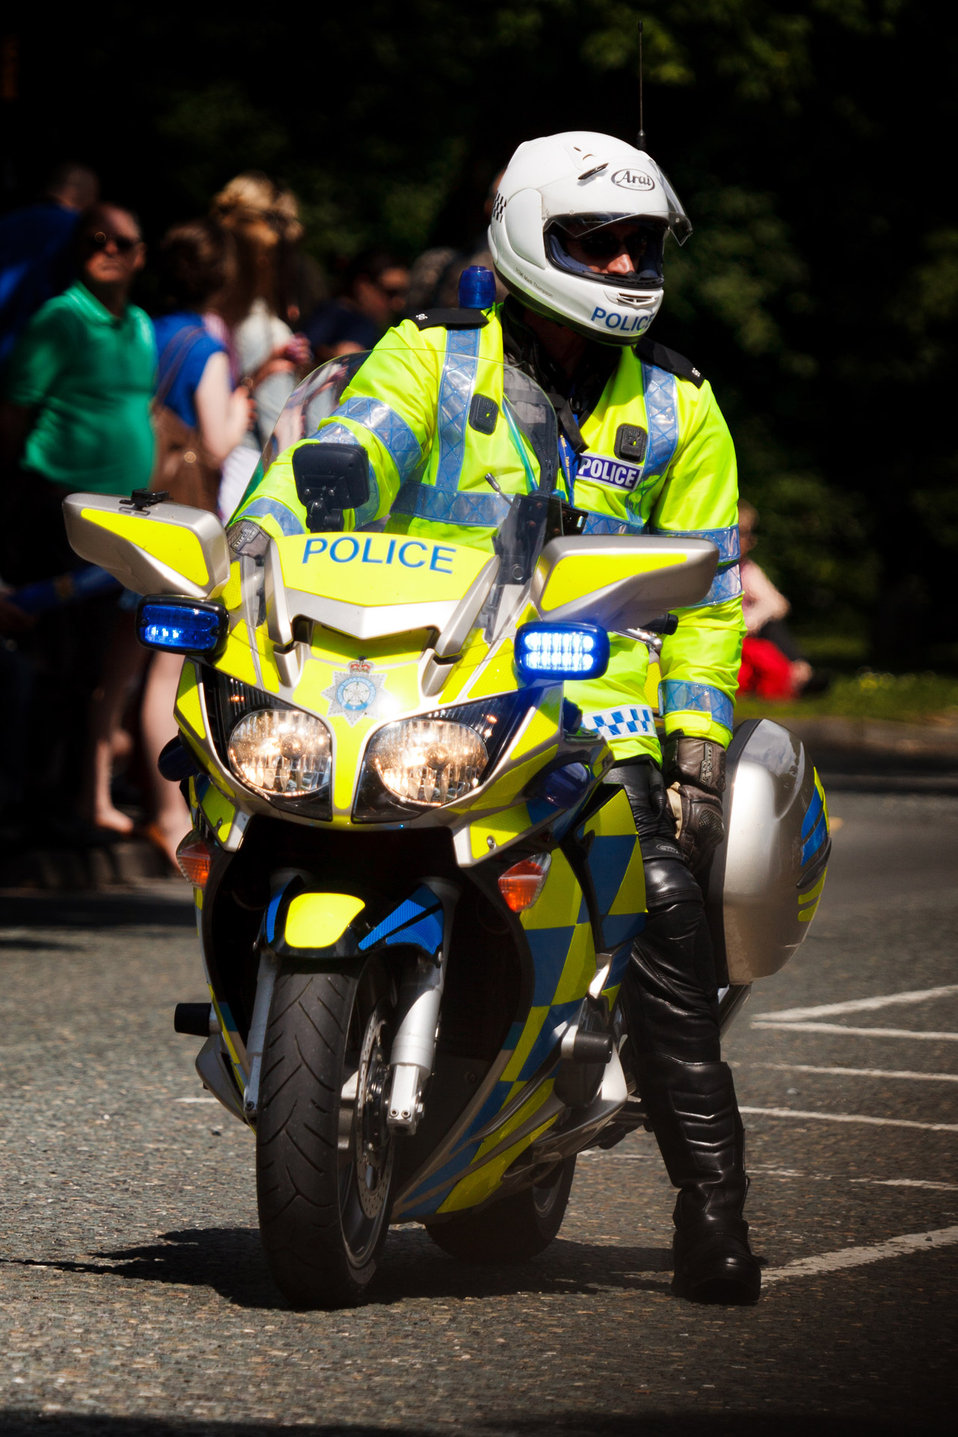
Policeman on motorcycle

British policeman on a motorbike.